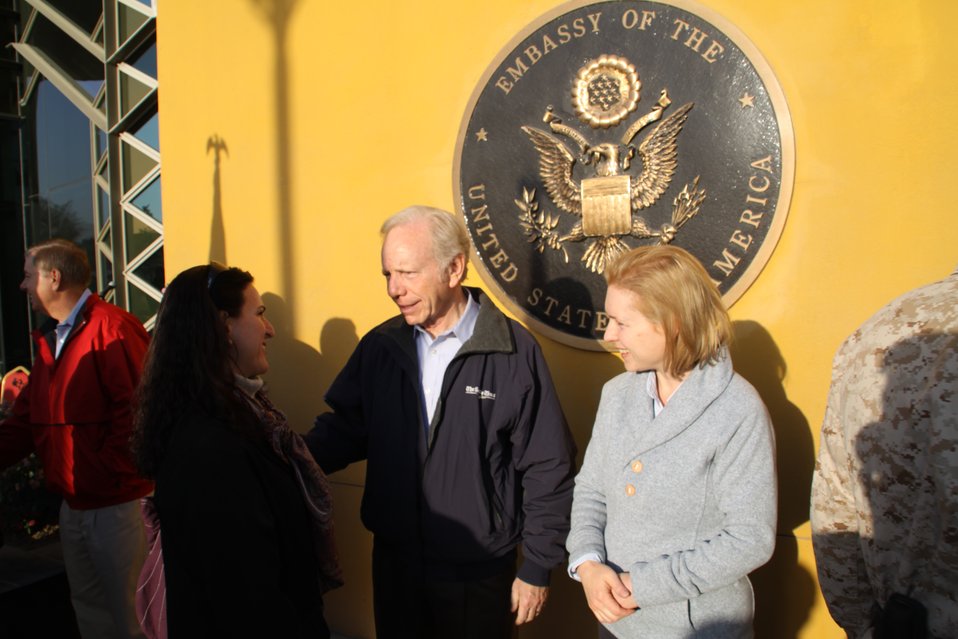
Senators Lieberman and Gillibrand